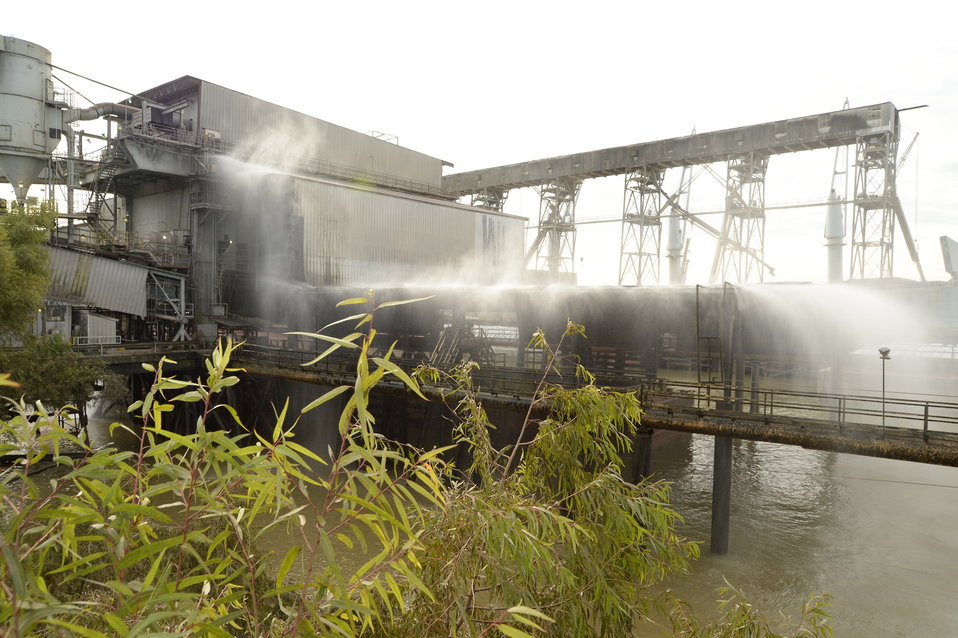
U.S. Department of Agriculture (USDA) Grain Inspection, Packers and Stockyards Administration (GIPSA) Federal Grain Inspection Service (FGIS) grain stations are washed down to cleanse loading and unloading areas and to prevent grain dust buildup near the Port of New Orleans in New Orleans, LA on Tuesday, Nov. 19, 2013.